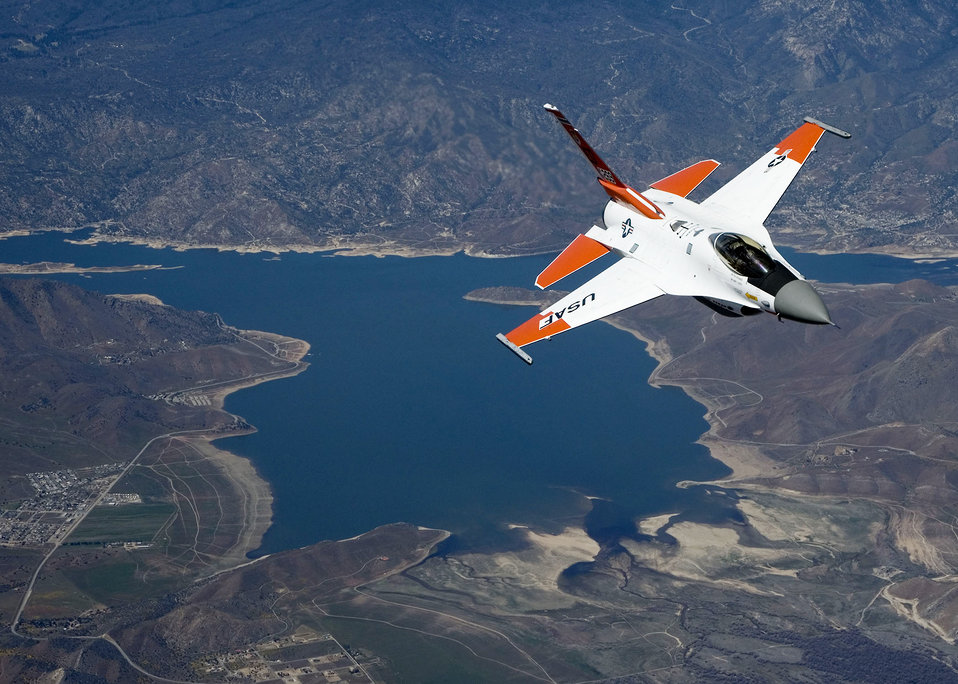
Testing, testing

An F-16 Fighting Falcon fitted with radio frequency identification tags flies behind a test tanker on an aerial flight test April 7, 2010, over Edwards Air Force Base, Calif. The mission tested the Automatic Receiver Aircraft Identification system on the tanker.